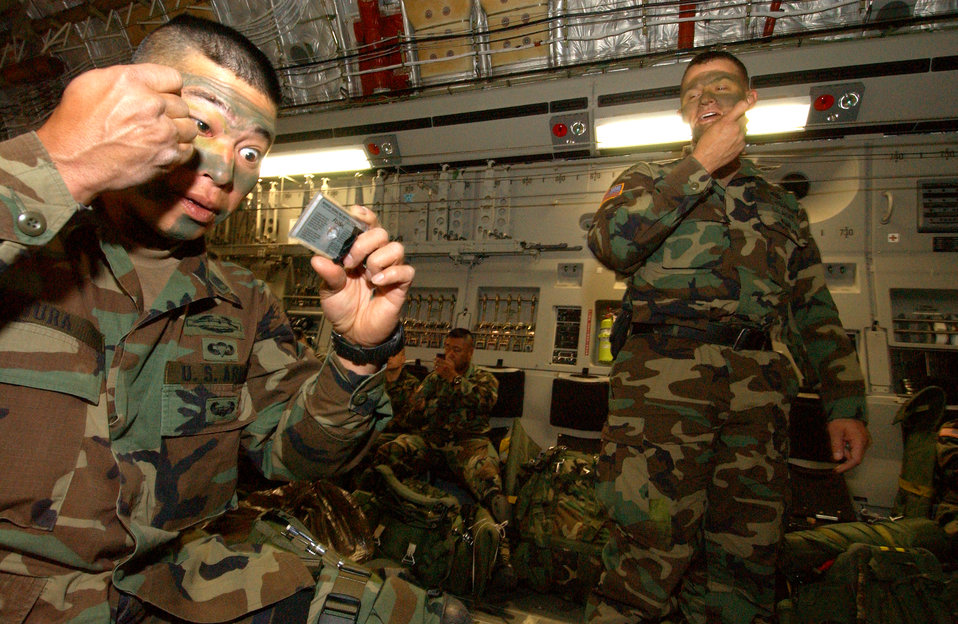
C-17s cross globe to assist international exercise

OVER AUSTRALIA -- Army paratroopers apply camouflage to their face before a nighttime airdrop from a C-17 Globemaster III on June 19 over Rockhampton, Australia, as part of the Talisman Saber 2005. Six C-17s from McChord Air Force Base, Wash., and Charleston AFB, S.C., participated in the airdrop as part of the international military exercise designed to improve combat readiness.